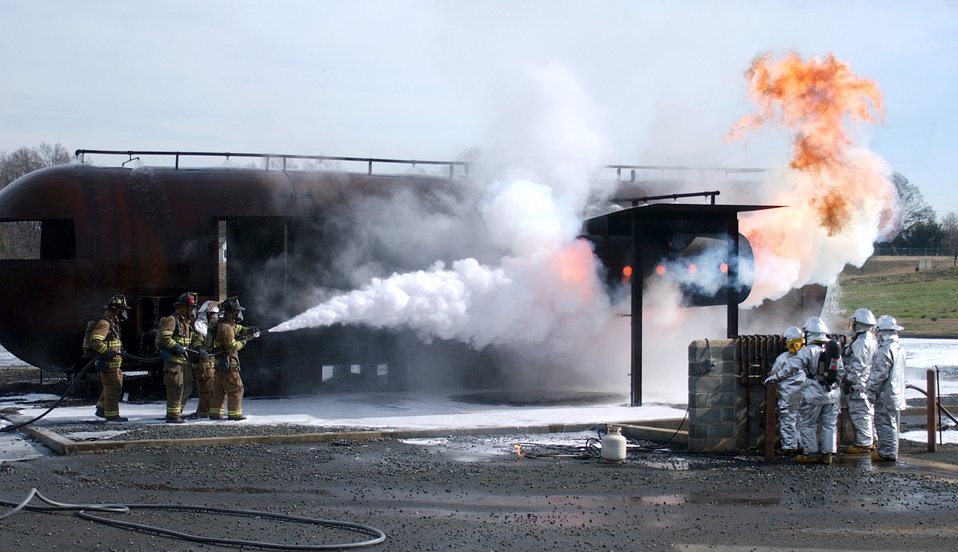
Feeling the heat

CHARLOTTE, N.C. (AFPN) -- Firefighters from the 916th Air Force Reserve Fire Protection Flight fight a fire during an exercise on a mock fuselage. The 916th, assigned to nearby Seymour Johnson Air Force Base, is performing their annual recertification training.